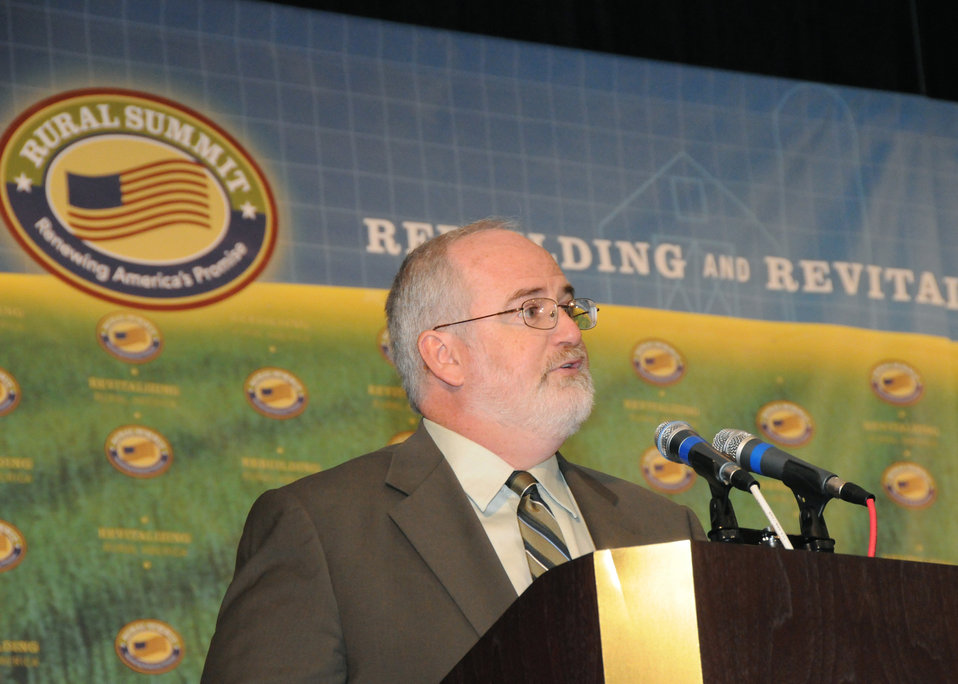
President of Jefferson College Dr. Raymond V. Cummiskey makes opening remarks at the National Rural Summit held at Jefferson College in Hillsboro, MO., on Thursday, June 3, 2010. USDA photo 10di1386-34